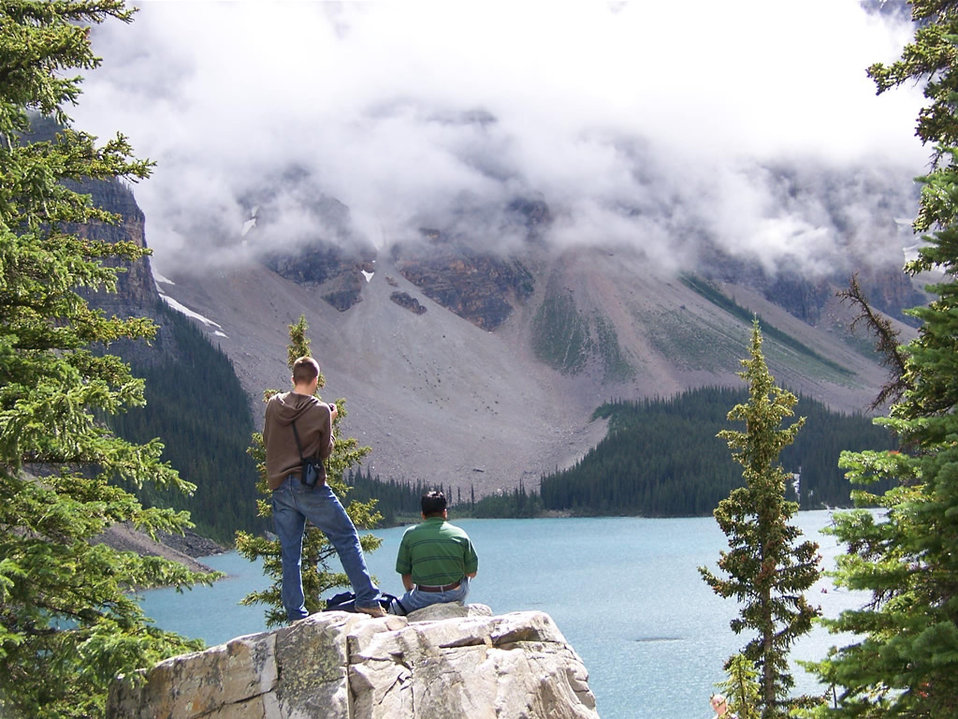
Uploaded by request of Alonzo Jake Spann

Taken in Maraine Lake in Alberta Canada

Behind the photograph shows two people enjoying the view of lake. Mariane Lake has Mountains and also Blue lake.